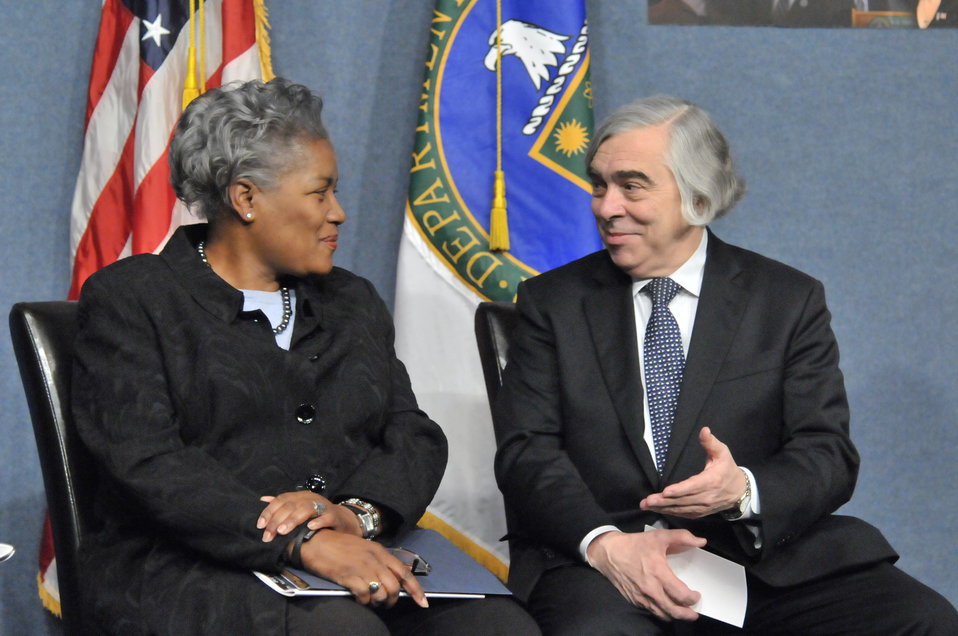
Department of energy -martin luther king / Black history month commemorative program with doe secretary e. Moniz in attendance